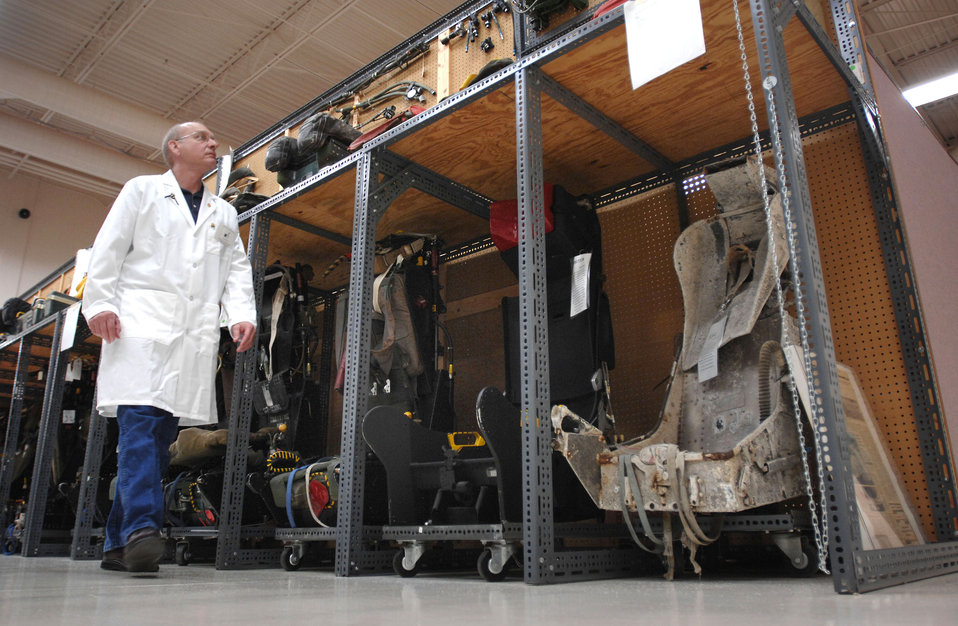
Brooks lab offers last-ditch effort to identify remains

Equipment Analyst Jim Hodges walks past rows of ejection seats at the 21,000-square-foot Life Sciences Equipment Laboratory Nov. 4 at Brooks City-Base in San Antonio. The lab is home to more than 50,000 uniforms and pieces of equipment from as far back as World War I. About 250 ejection seats line the walls.